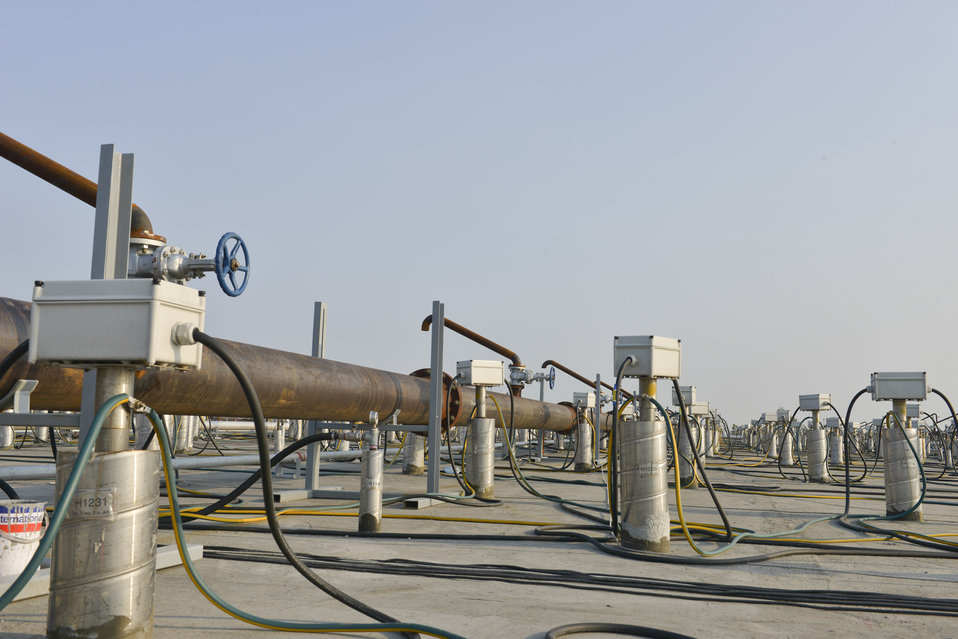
The containment and treatment structure at the Danang Airport Project site.

Heating elements have been installed into the heater wells that are drilled throughout the containment structure, and power cables have been installed to connect the treatment system to the electrical substations adjacent to the containment structure.

March 24, 2014.